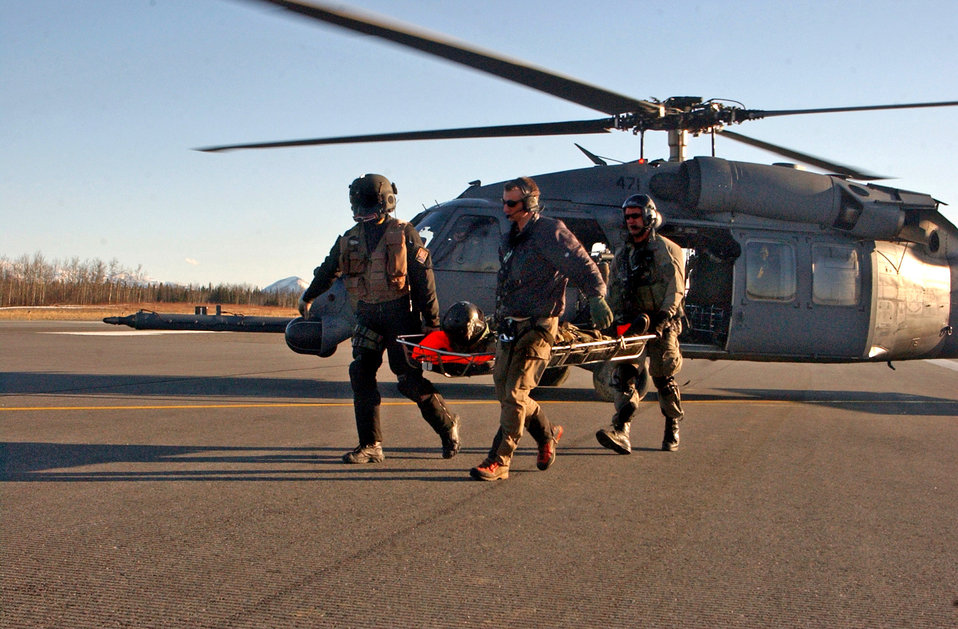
Alaska range, airspace critical to combat training

An aerial gunner and two pararescuemen off-load a simulated, injured aircrew member from a HH-60 Pave Hawk onto a HC-130 Hercules during a combat search and rescue training mission April 17 at Eielson Air Force Base, Alaska. Airmen from the 79th Rescue Squadron at Davis-Monthan Air Force Base, Ariz., are operating the HC-130 during a combat search and rescue mission at Red Flag-Alaska 07-1.